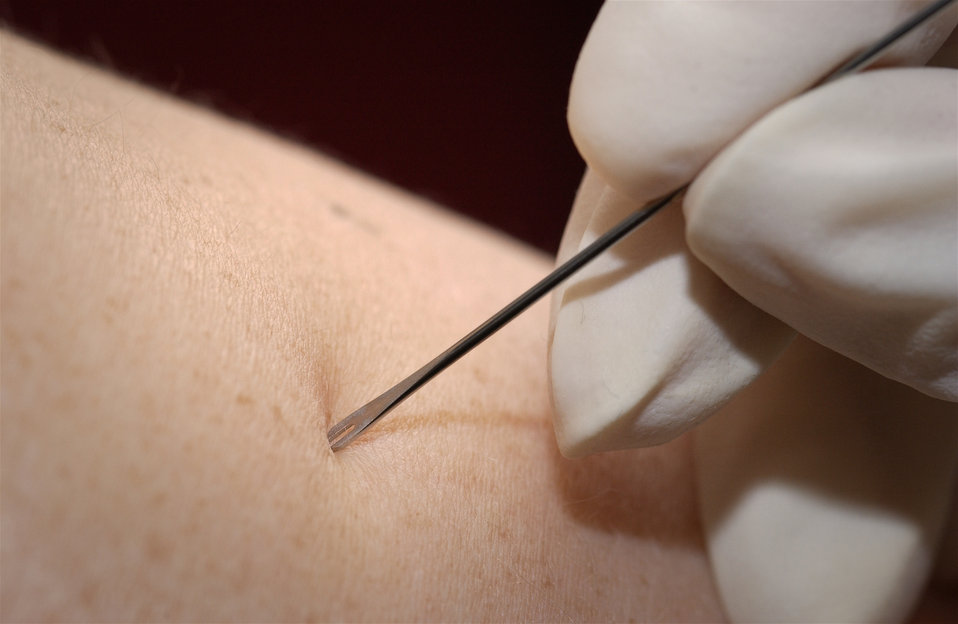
CDC Clinician demonstrates the use of a bifurcated needle during the 2002 Smallpox Vaccinator Workshop.